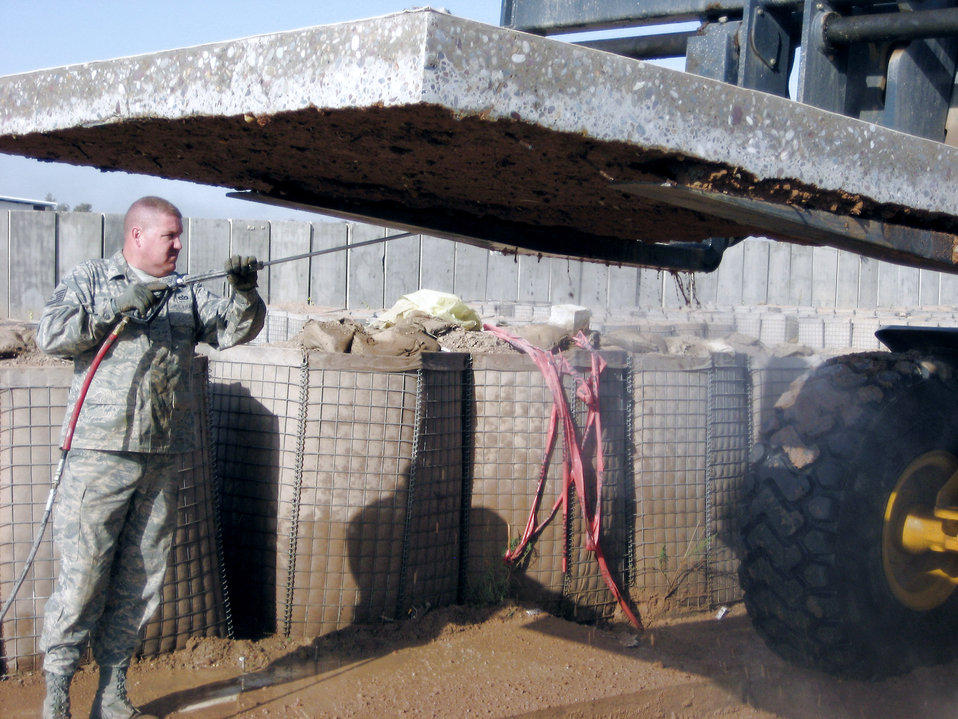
Cementing Balad, Anaconda hospital in history

Tech. Sgt. Jeffrey Barry pressure sprays excess dirt from the bottom of a section of floor from the original Air Force Theater Hospital March 1 at Balad Air Base, Iraq. The floor section is being cleaned prior to transporting to the National Museum of Health and Medicine in Washington. The origianl hopital has earned the recognition of being the location where the most lives were lost and saved in the Iraq theater of operations. Sergeant Barry is a 332nd Expeditionary Civil Engineer Squadron heating, ventilation and air conditioning technician deployed from Luke Air Force Base, Ariz.